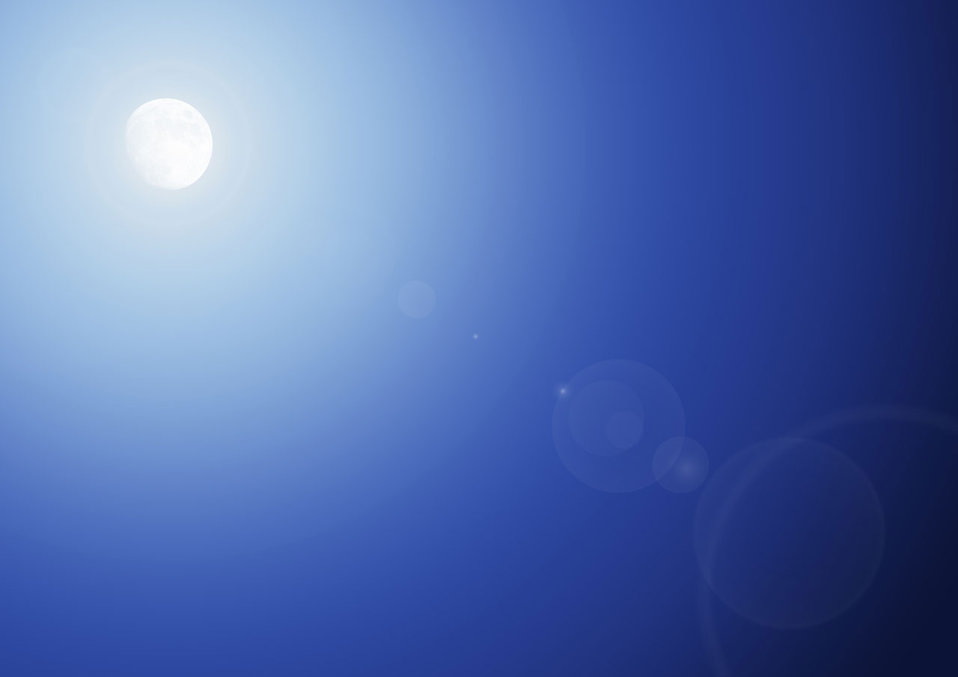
Moon light

Illustration of a moon light.